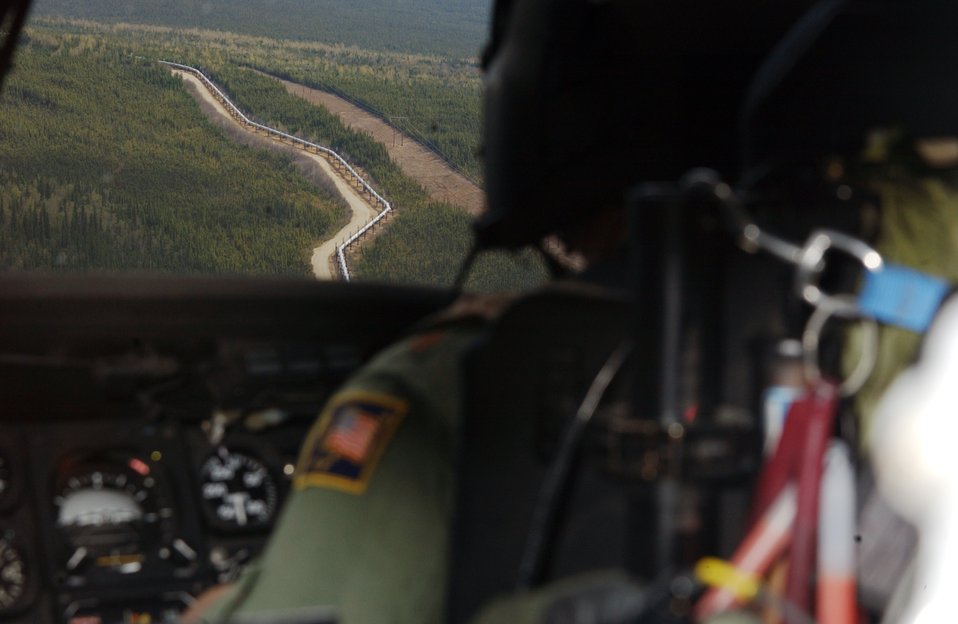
Keeping an eye on gas

Maj. William Kupchin scans the terrain for suspicious activity over the Trans-Alaska Pipeline System May 10 during Northern Edge. The exercise is designed to practice operations, techniques and procedures, and enhance interoperability among all the services and civilian emergency response teams. Major Kupchin is a pilot assigned to Det. 1, 210th Rescue Squadron at Eielson Air Force Base, Alaska.